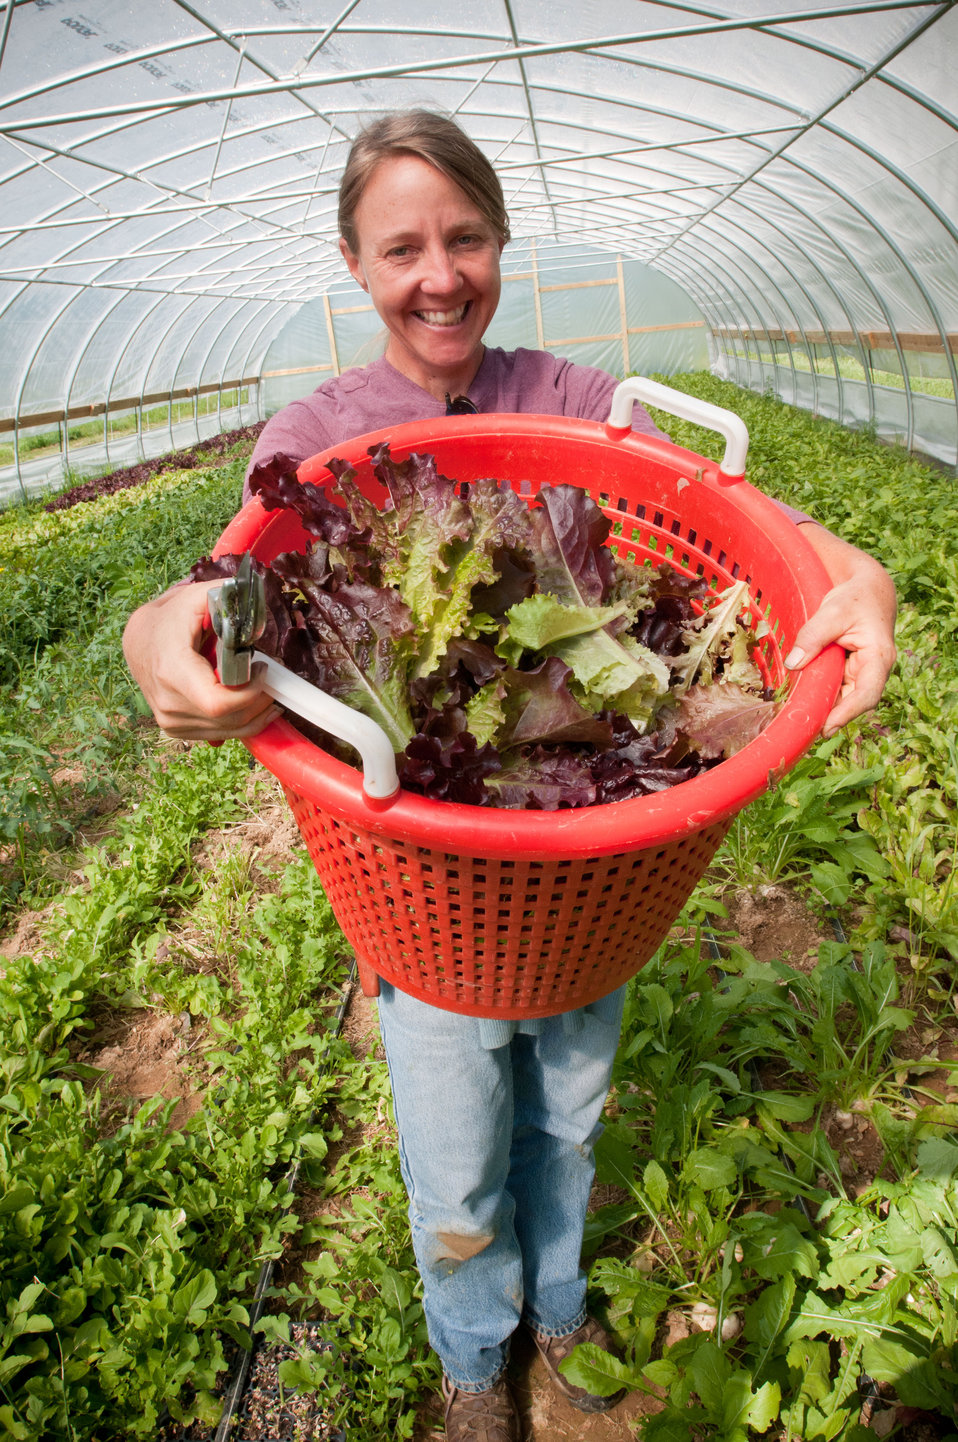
Amy's Organic Garden in Charles City, VA, on Thursday, May 5, 2011. Owner Amy Hicks harvesting greens at her farm. Ms. Hicks' farm participates with Fall Line Farms a local food cooperative in the Richmond, VA area that offers a wide variety of household food staples and specialty items on an ever changing inventory of fruits, vegetables, meats, soaps, eggs, cheeses, flowers, honey, pastas, sauces, syrups, baked goods, mushrooms, flour and grains. Suppliers post what they have on a Lulus Local Food online listing and customers can make their selection. Every Thursday suppliers deliver orders to, one of several pick-up points, designated by the customers in or around the Richmond area.